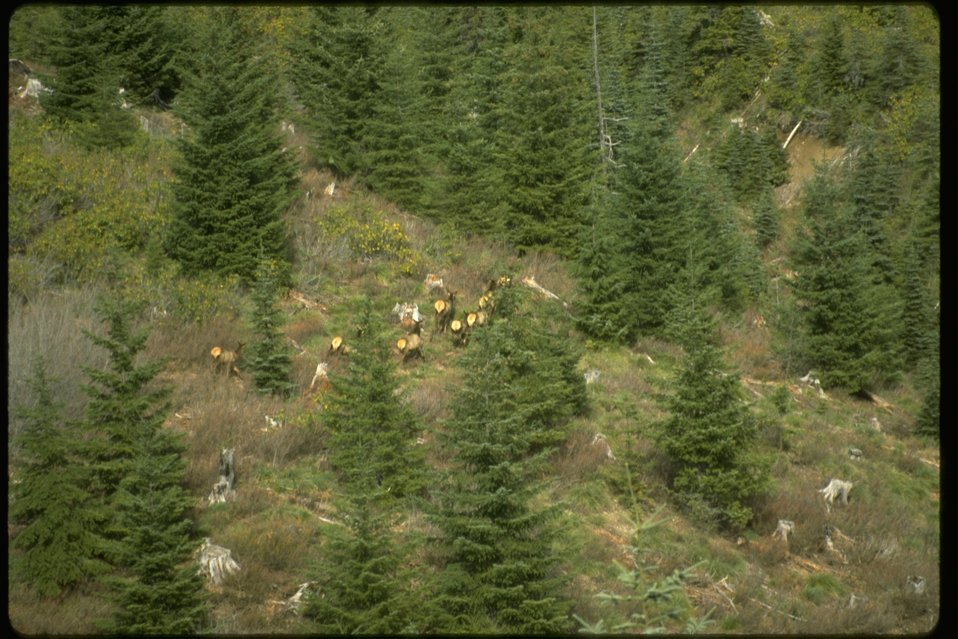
Elk in a clear cut site.